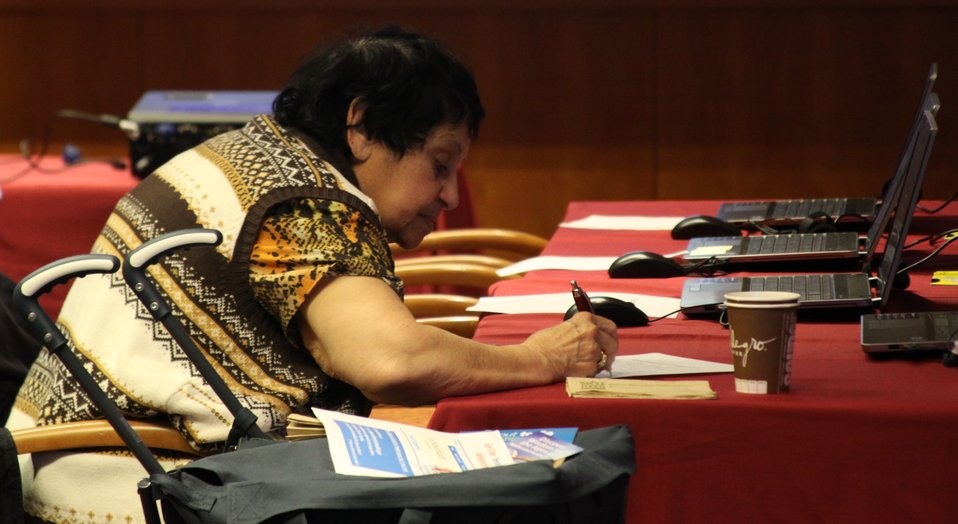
Digital Literacy for Seniors: How the Internet Can Benefit Older Americans, April 24, 2013